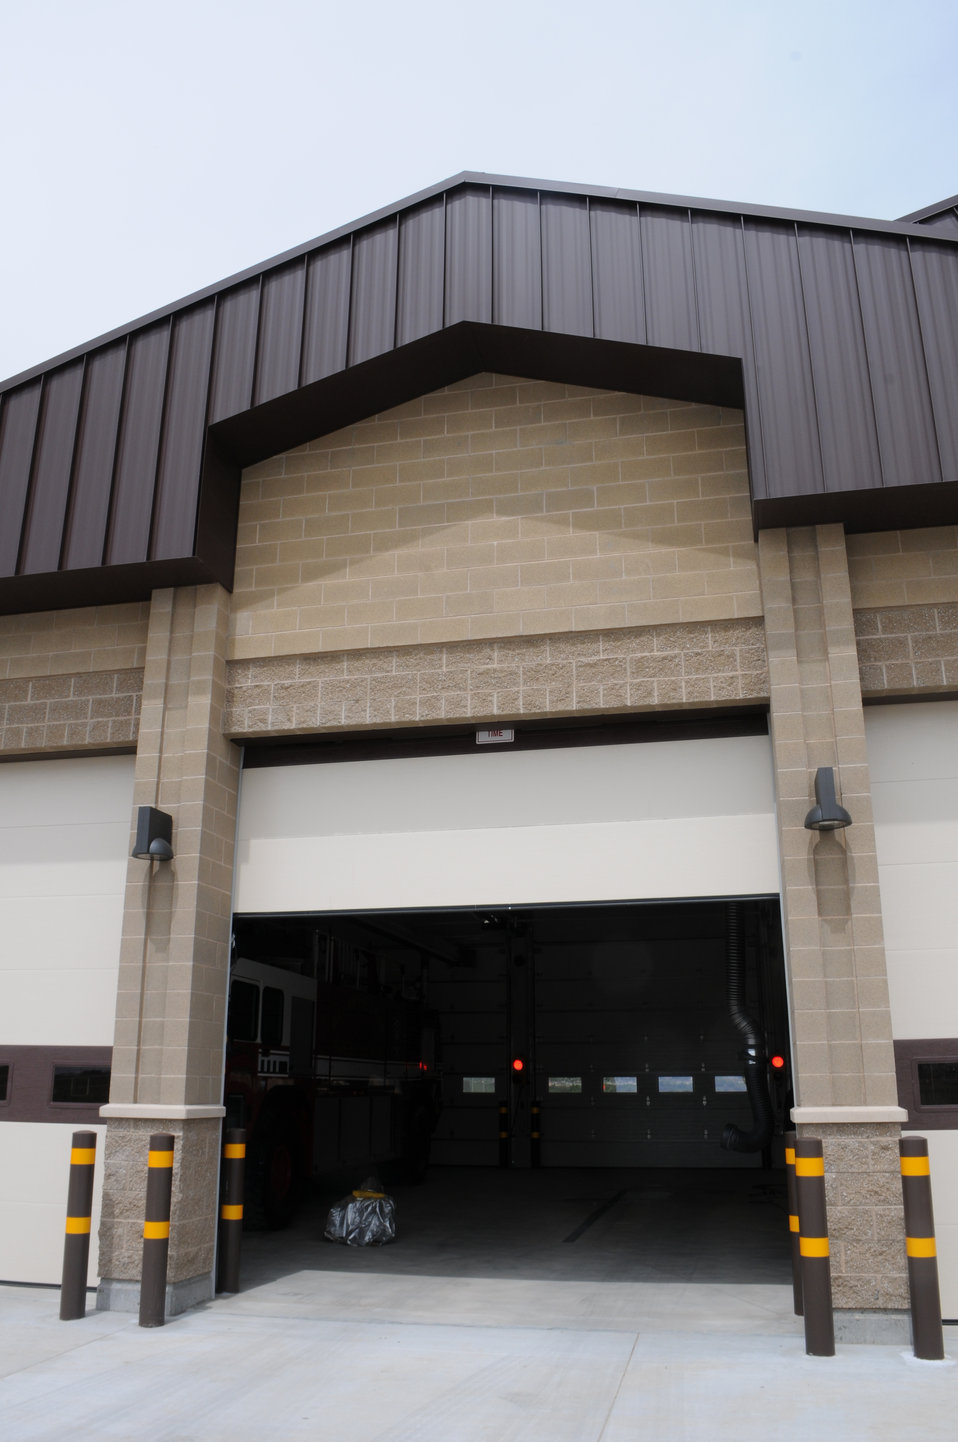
Corps completes first Gold-rated facility at Hill Air Force Base

The vehicle entrance to the new three-bay fire station at Hill Air Force Base, Utah, May 16, 2011. The U.S. Army Corps of Engineers Sacramento District oversaw construction of the $4.5 million facility, which received a Gold rating under Leadership in Energy and Environmental Design. LEED is an internationally-recognized green building certification system developed by the U.S. Green Building Council in 2000. The 7,739-square-foot facility is equipped with three fire-fighting vehicle parking bays.